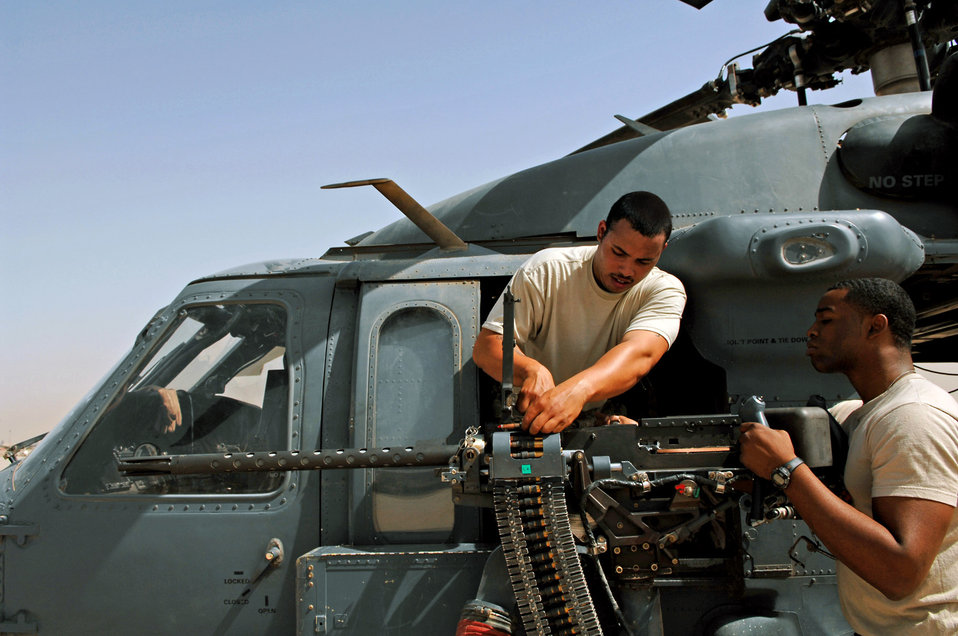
One Mississippi, two Mississippi

Senior Airmen Derand Javier (left) and Chris Moore test the head spacing of a .50-caliber machine gun on an HH-60G Pave Hawk helicopter at Balad Air Base, Iraq. Both Airmen are 64th Aircraft Maintenance Unit weapons specialists and deployed from Moody Air Force Base, Ga.